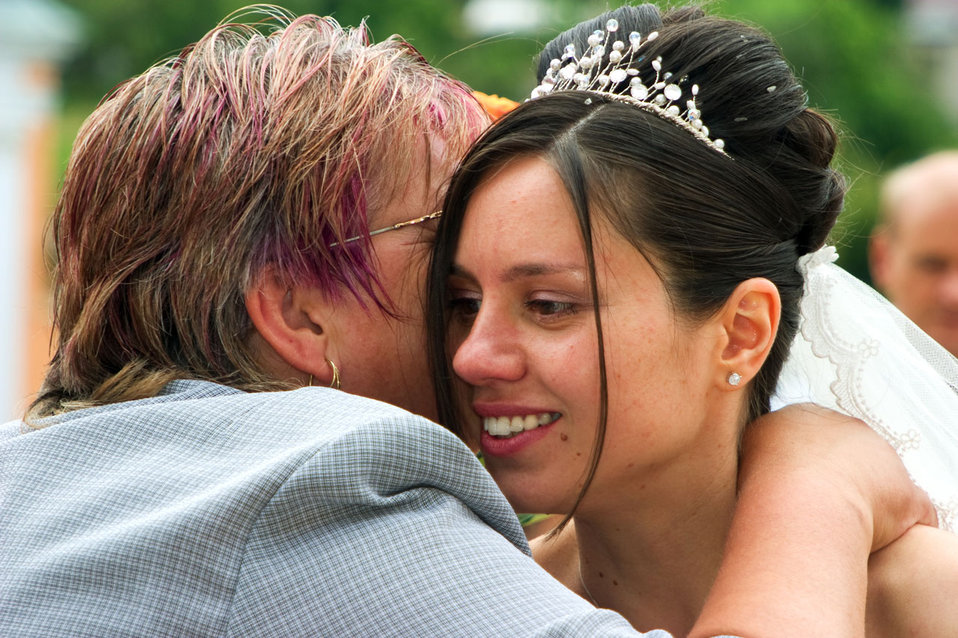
Tears of happiness.